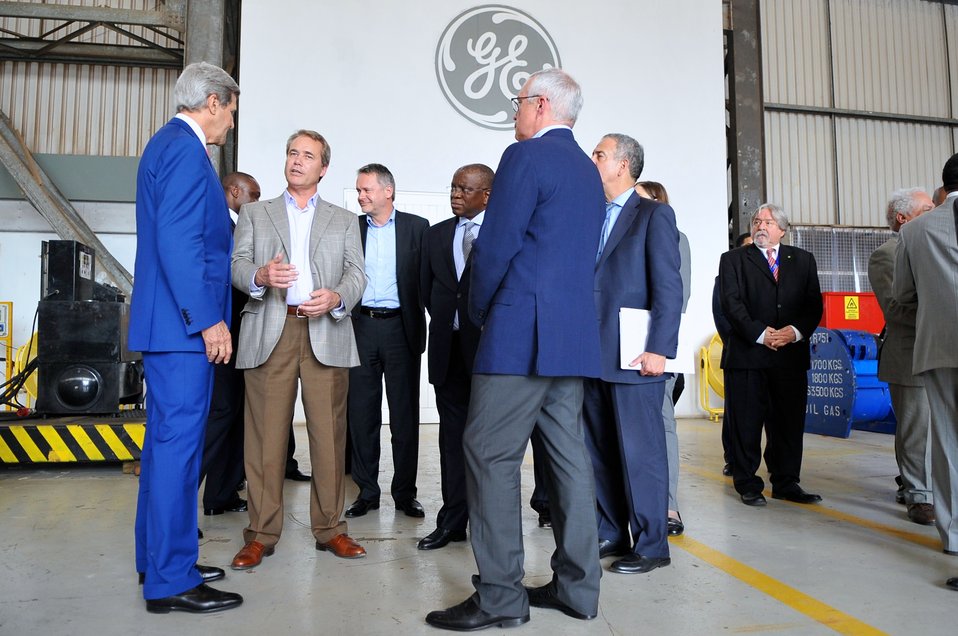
Secretary Kerry Meets With U.S. Oil Executives To Talk About Angola Outreach

U.S. Secretary of State John Kerry, during a tour of the Port of Luanda, Angola, on May 4, 2014, speaks with U.S. oil executives based in Western Africa to talk about their efforts to involve more Angolans in their operations.